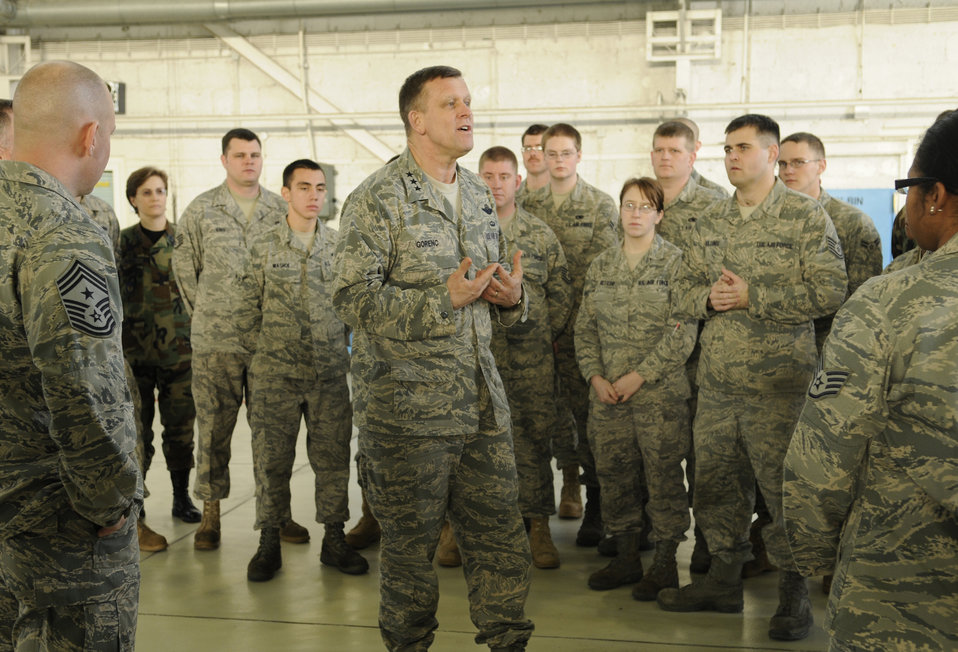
Changes at Spangdahlem

Lt. Gen. Frank Gorenc, 3rd Air Force commander, speaks with Airmen at Spangdahlem Air Base, Germany, about Air Force Smart Operations for the 21st Century initiatives and emphasizes the importance of constant improvement during his visit here Feb. 18, 2010. General Gorenc was visiting Spangdahlem for a tour and to speak to Airmen there about possible operational changes coming to the base.